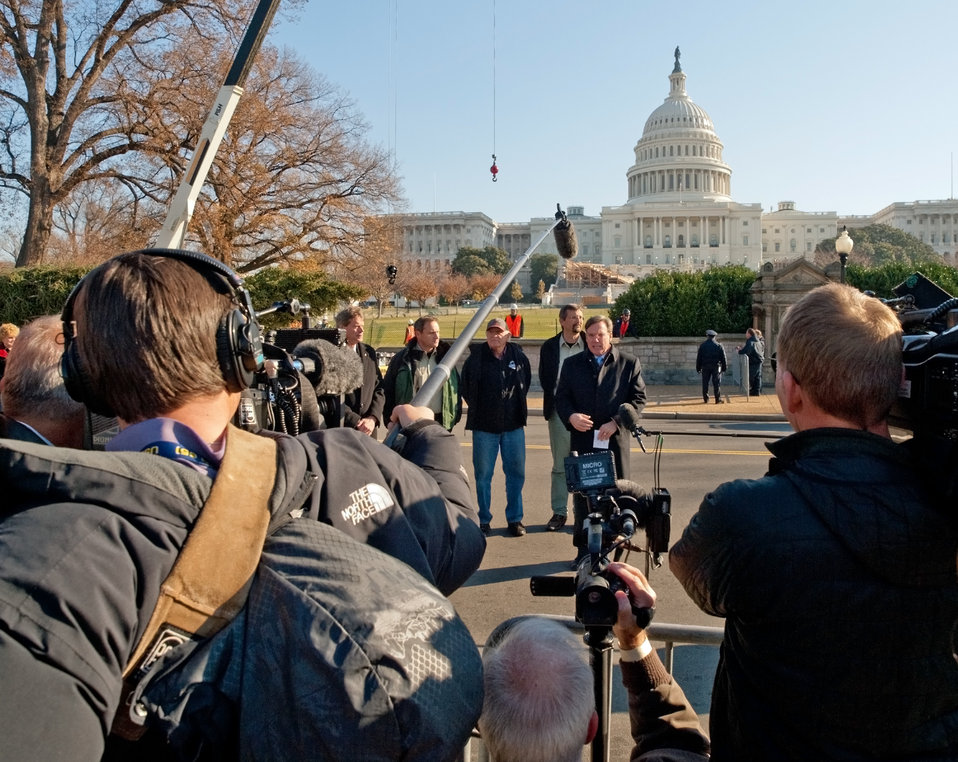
Media at the arrival of the 2012 Capitol Christmas Tree into Washington, D.C. on Nov.26, 2012. The 73-foot Englemann spruce traveled from the White River National Forest in Colorado.